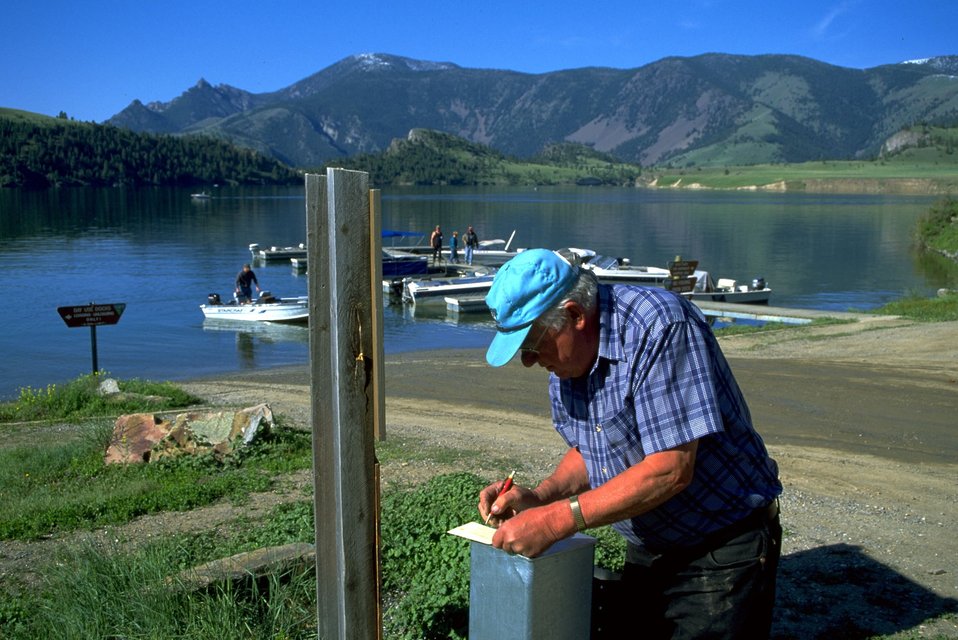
Man completing form at fee station at Log Gulch Campground